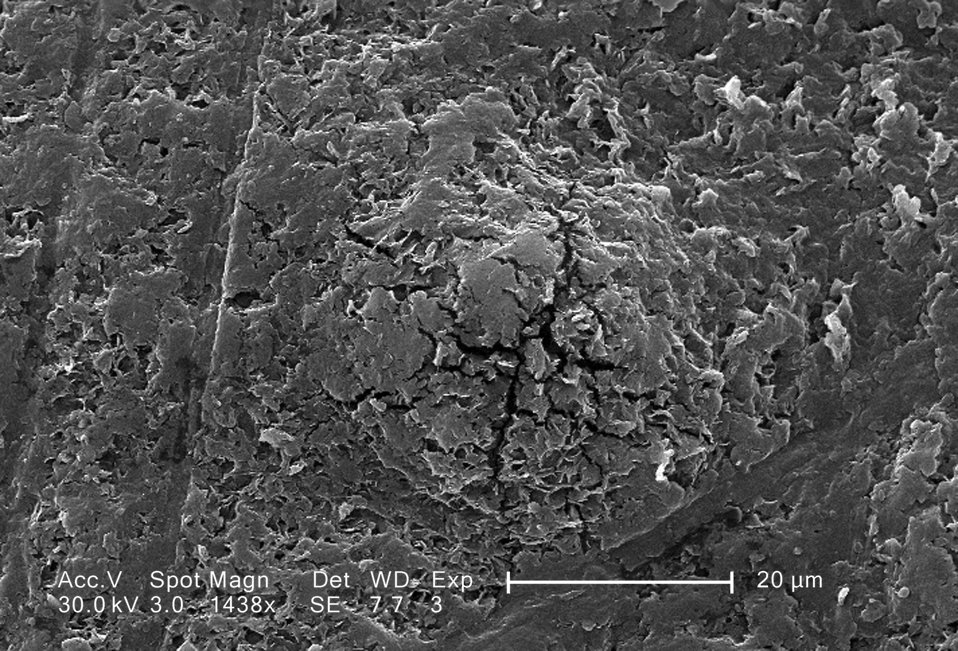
This scanning electron micrograph (SEM) revealed the magnified, roughened surface of a Vitis sp., red table grape; Magnified 1438x. Note that what would appear to be a smooth surface by the unaided eye, is actually a roughened surface, capable of harboring bacteria in its cracks and crannies, and therefore, should be thoroughly washed before consuming these scrumptious fruits. Comparing this grape's surface to that of the white table grape, i.e., PHIL ID#s 7556, 7557, 7558, 7559, you'll not that the red table grape's surface is far rougher than the white table grape's.Fresh Facts: